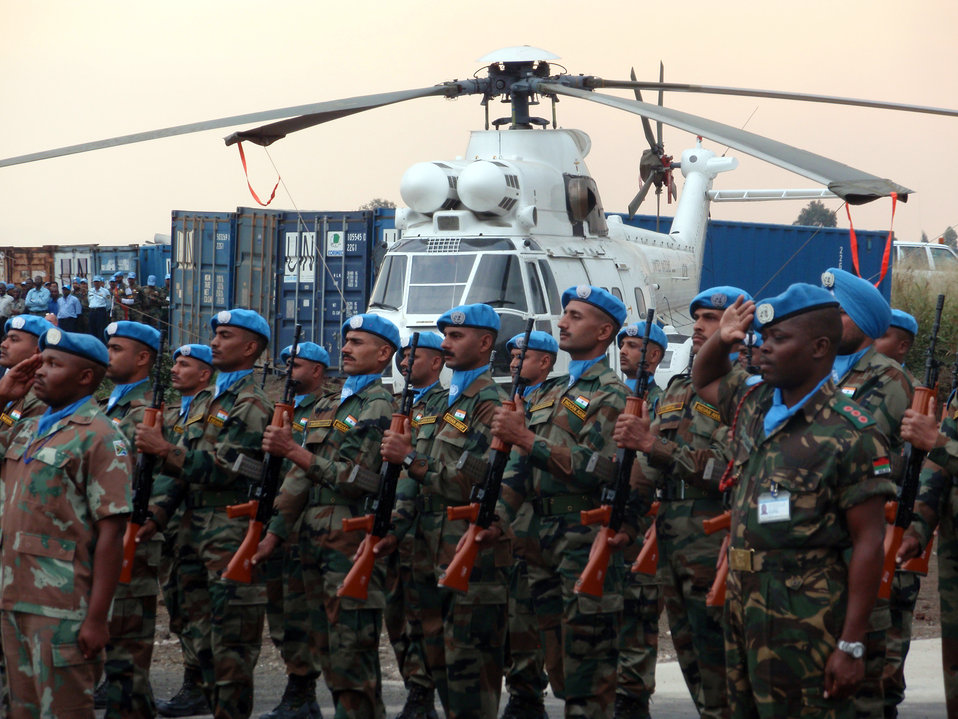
Secretary Clinton Visits MONUC in Goma

Soldiers salute as U.S. Secretary of State Hillary Rodham Clinton tours the United Nations Mission in the Democratic Republic of Congo (MONUC) air support operations base in Goma, Democratic Republic of Congo August 11, 2009.